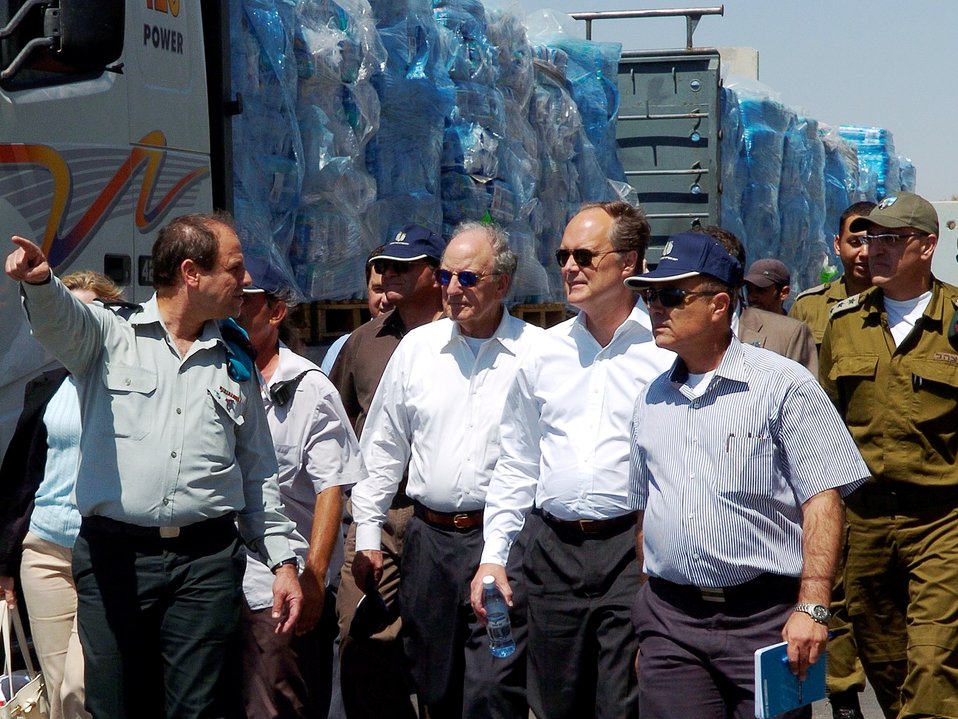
Special Envoy Mitchell and Ambassador Cunningham Visit the Kerem Shalom Crossing

U.S. Special Envoy for Middle East Peace George Mitchell and U.S. Ambassador to Israel James Cunningham visit the Kerem Shalom crossing on the border of the Gaza Strip on June 30, 2010.